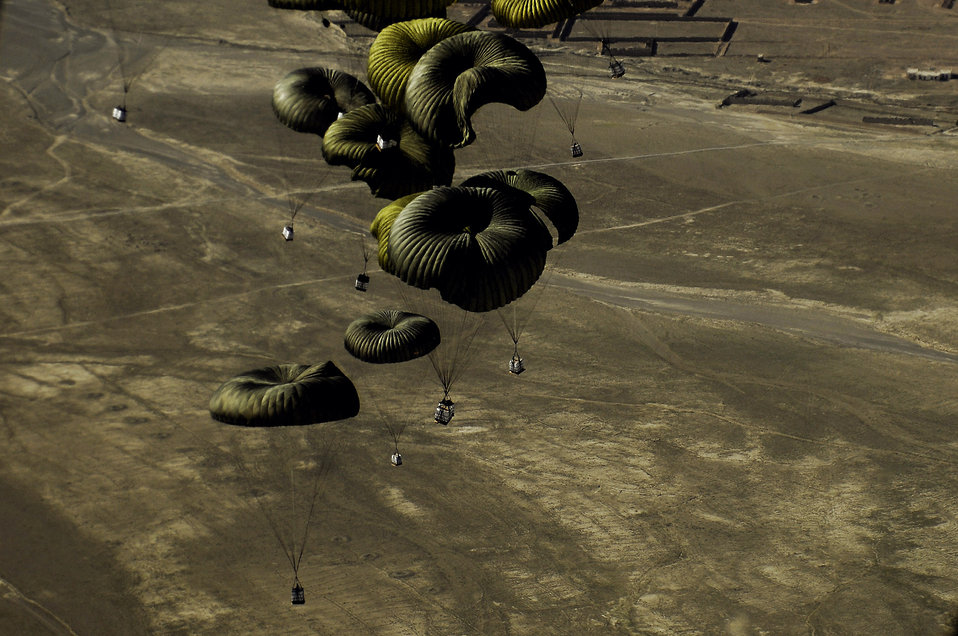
Afghanistan airdrop

Forty bundles of humanitarian supplies are dropped from a C-17 Globemaster III using the Joint Precision Airdrop Delivery System to a drop zone April 13 in Afghanistan. The C-17 aircrew is from the 17th Airlift Squadron from Charleston Air Force Base, S.C.